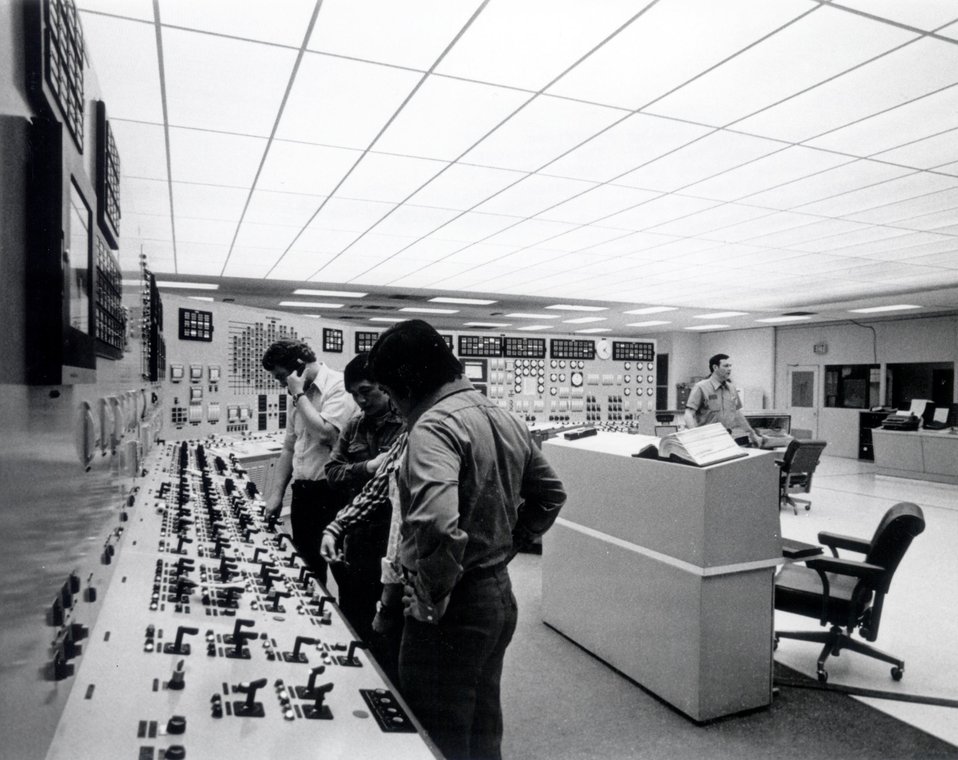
The control room of Millstone Power Station, Unit 1.